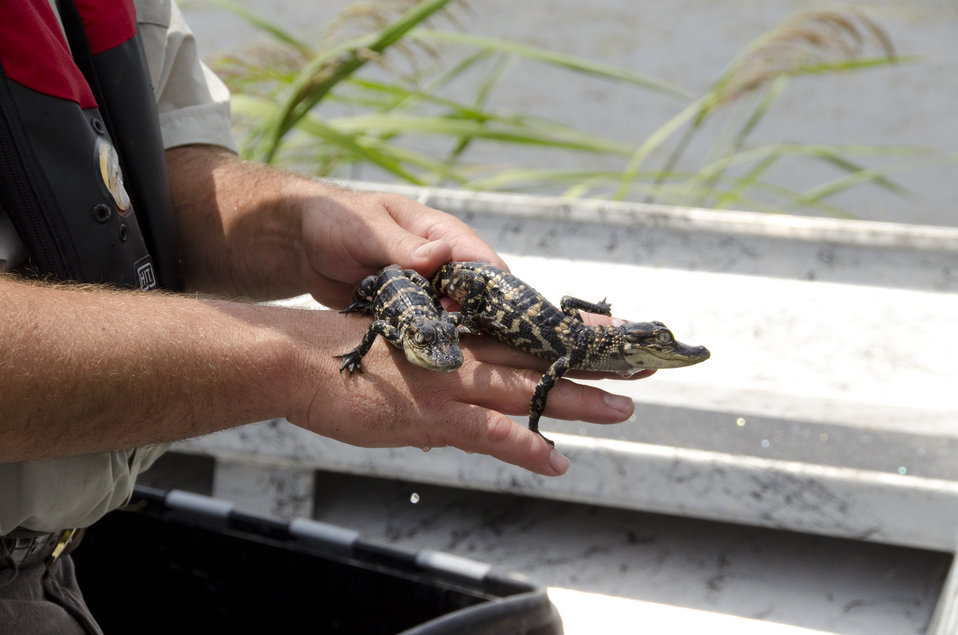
American alligator babies

These juvenile American alligators were released into the Louisiana marshes as part of the Louisiana Department of Wildlife and Fisheries Alligator Program.